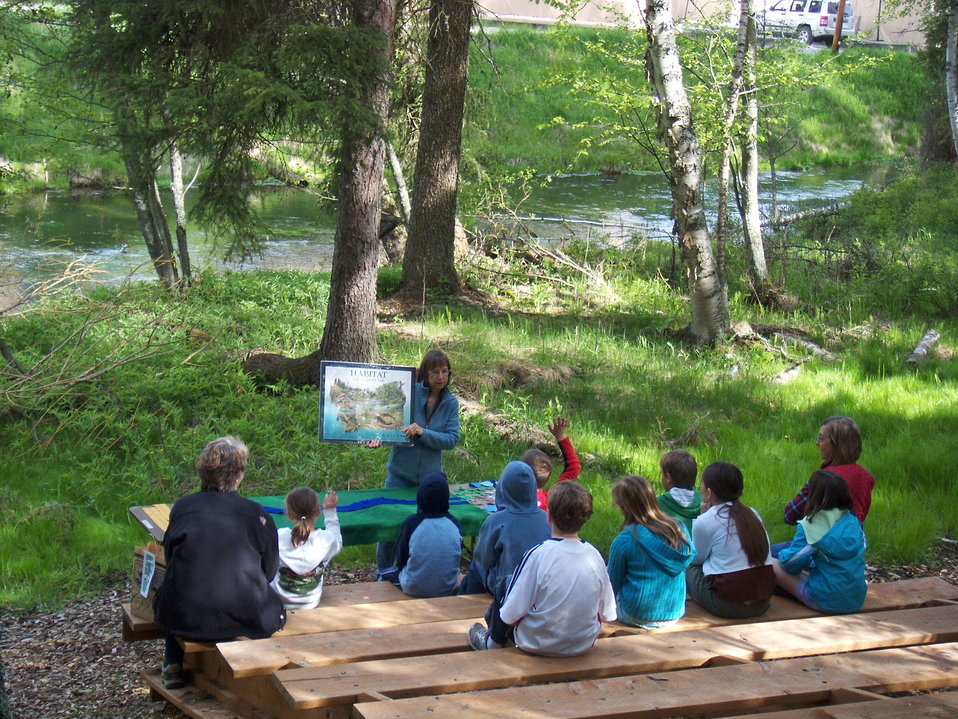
Youth at Creston National Fish Hatchery

A local school group learns all about the biology of fish at Creston National Fish Hatchery in Montana. Fish hatcheries are a great place to take your school groups or family to learn about fish breeding and to take an educational nature hike.